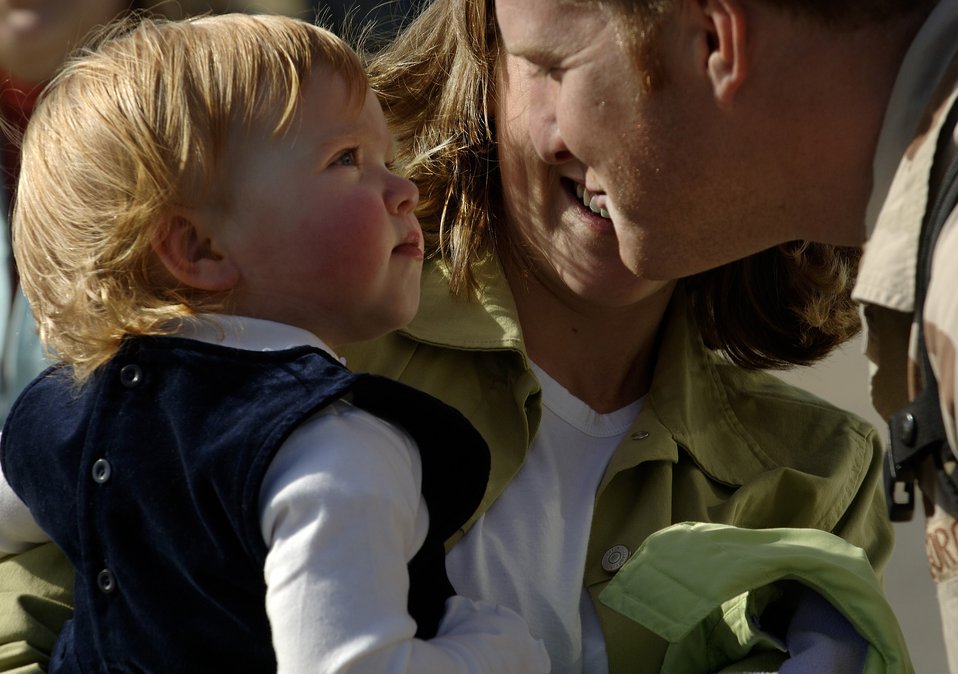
1St Security Forces Return

LANGLEY AIR FORCE BASE, Va. (AFPN) -- Staff Sgt. Jon Hendrickson greets his wife, Cara and daughter, Ashton after returning home from an eight month deployment to Iraq Jan. 9. Sergeant Hendrickson is with the 1st Security Forces Squadron.